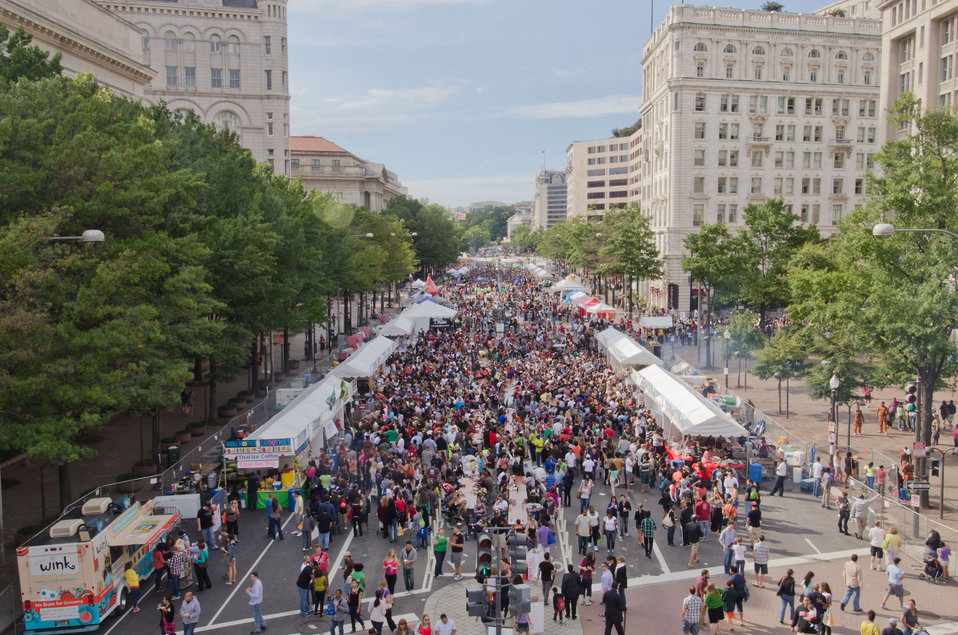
The Taste of D.C., event highlights more than 70 eateries, 30 specialty beer providers, the United Service Organization (USO) Metropolitan Washington, and live bands. It is anticipated that more than 500,000 people will attend over the course of the three-day event, which extends from the White House to the Capitol, along Pennsylvania Ave. in Washington D.C. on Saturday, October 6, 2012. Agriculture Food Safety and Inspection Service specialists present talks and cooking demonstrations. Agriculture’s mobile Discovery Zone is on hand to educate children and parents about the four main principals of food safety – clean, separate, cook and chill.